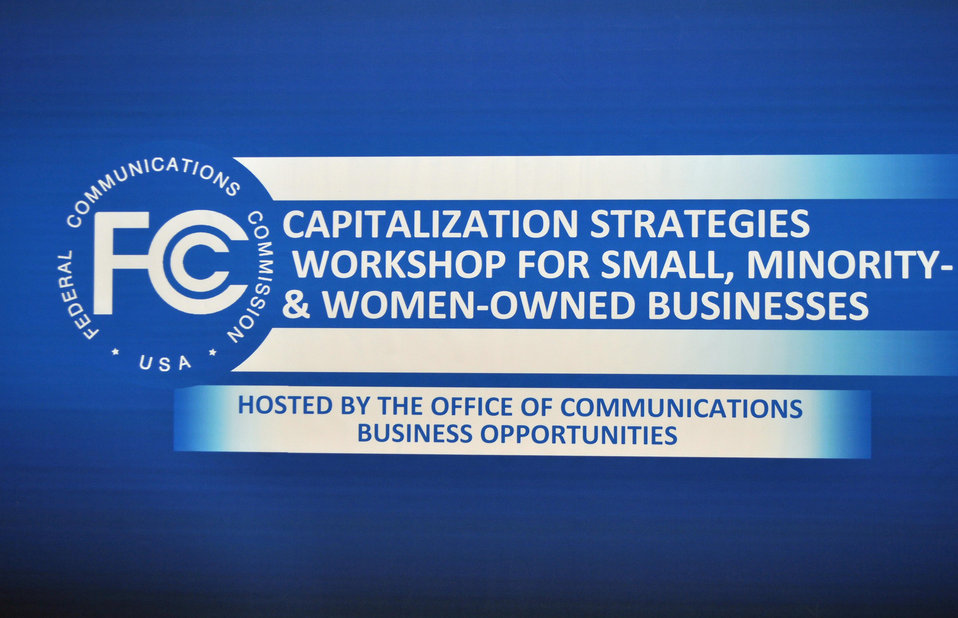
Capitalization Strategies

Workshop for small, minority and women owned businesses. Hosted by the Office of Communications Business Opportunities